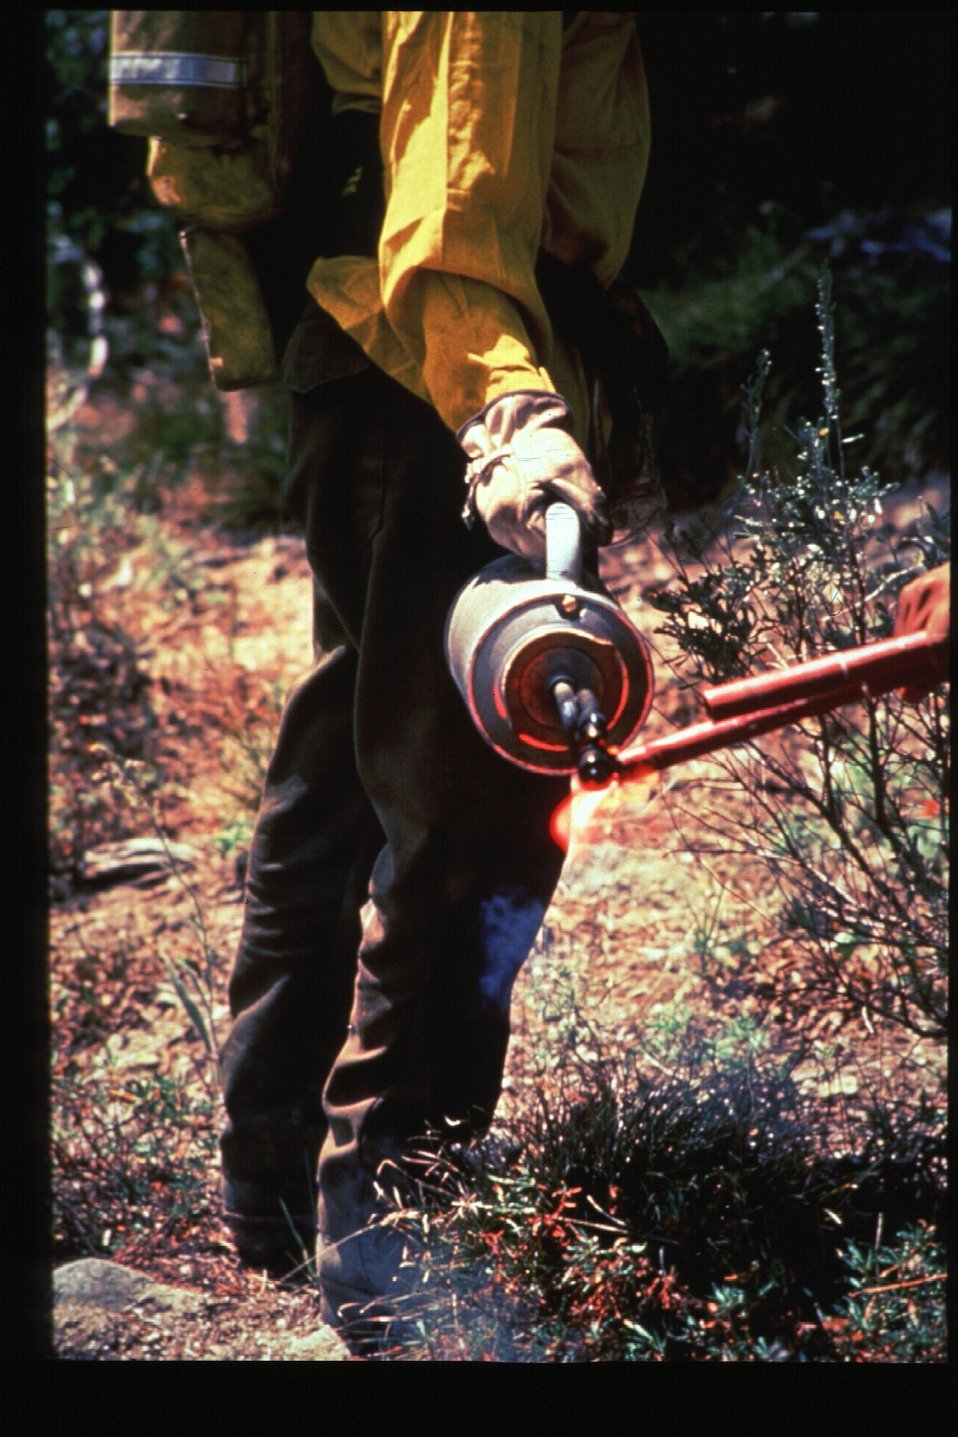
Boise Foothills Fire Danskin Mountains and South Fork of Boise River Prescribed fire Four River Field Office LSRD Lower Snake River District